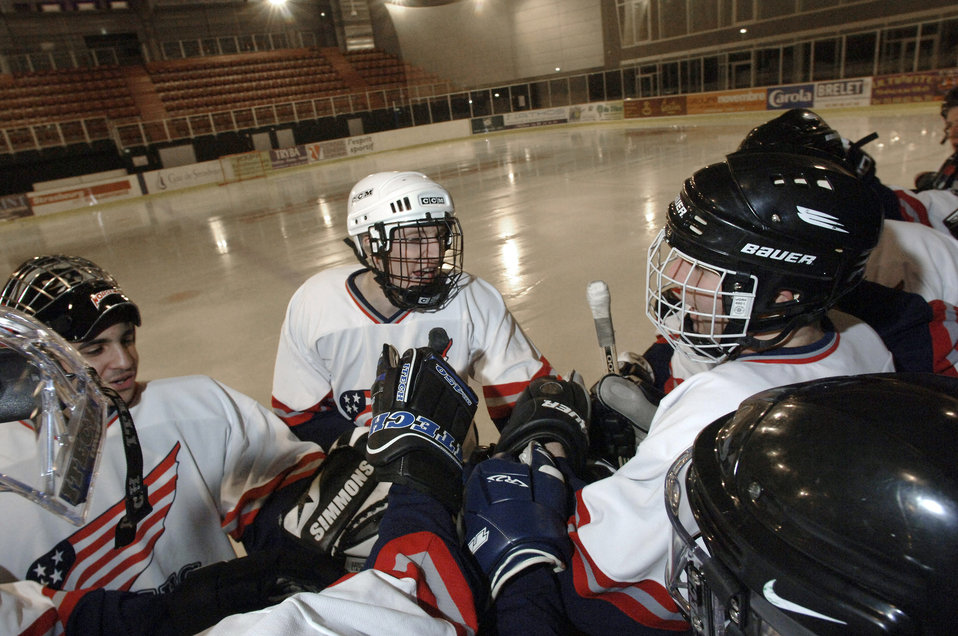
German-based Airmen put French on ice

STRASBURG, France (AFPN) -- Airman 1st Class Rafael Lezcano (left), Capt. Kris Uber (center) and 1st Lt. Ryan Argenta join hands for a team cheer during a hockey game in eastern France. The Ramstein Rams hockey team held on to win 6-5 against the Strasburg Gryphons despite a late game push. The Airmen are part of the Kaiserslautern Military Community, which has a hockey team made up of 30 players in different skill levels varying from semi-pro to beginners. Captain Uber and Lieutenant Argenta are with the 76th Airlift Squadron at Ramstein Air Base, Germany. Airman Lezcano is with the 723rd Air Mobility Squadron at Ramstein AB.